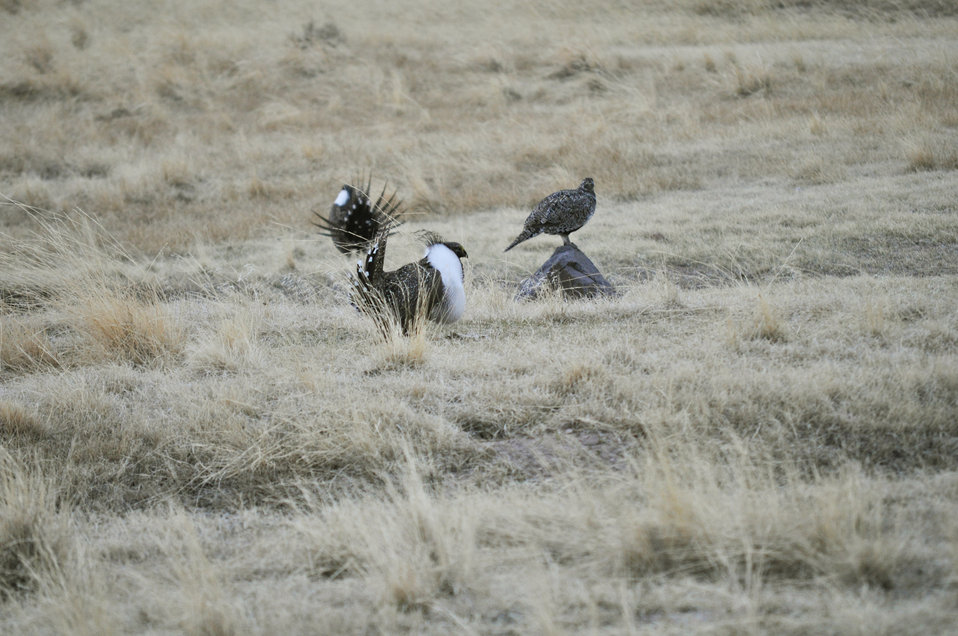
Greater Sage-Grouse

Male greater sage-grouse strut for female at lek (dancing or mating grounds) near Bodie, California.